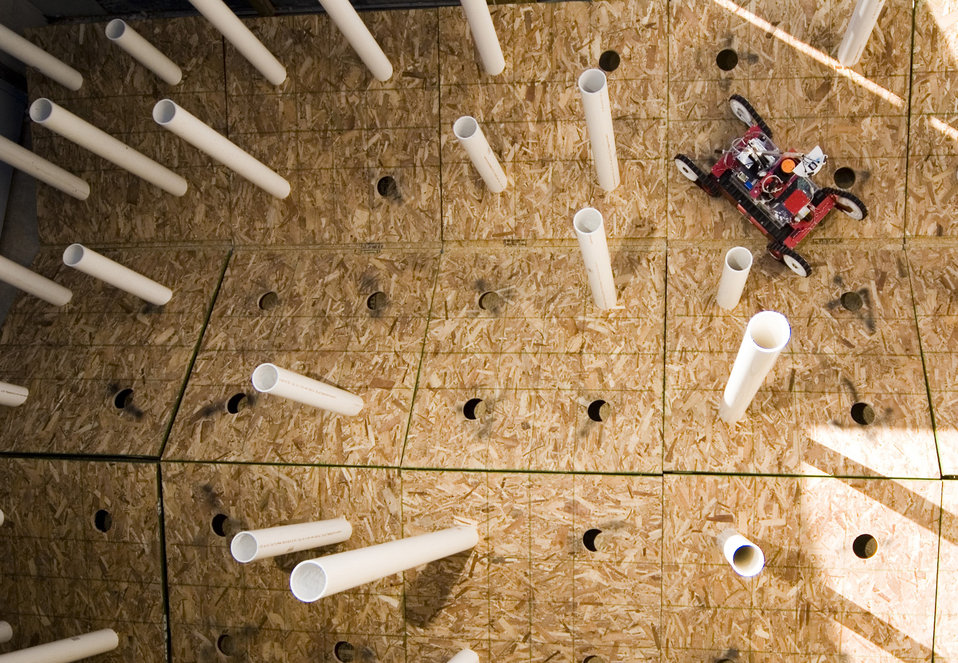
Robots are being trained to map spaces using their sensors. This robot travels through a simulated wooded area that has uneven terrain and randomly placed PVC pipes as trees. It sends back data to researchers who use mapping algorithms to create a map.